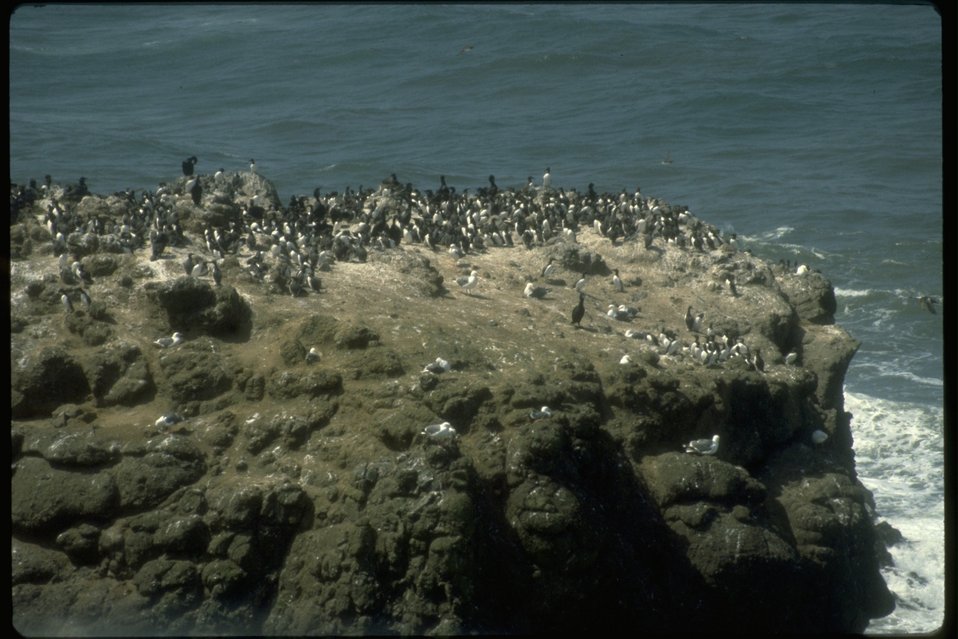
Yaquina Bird Colony